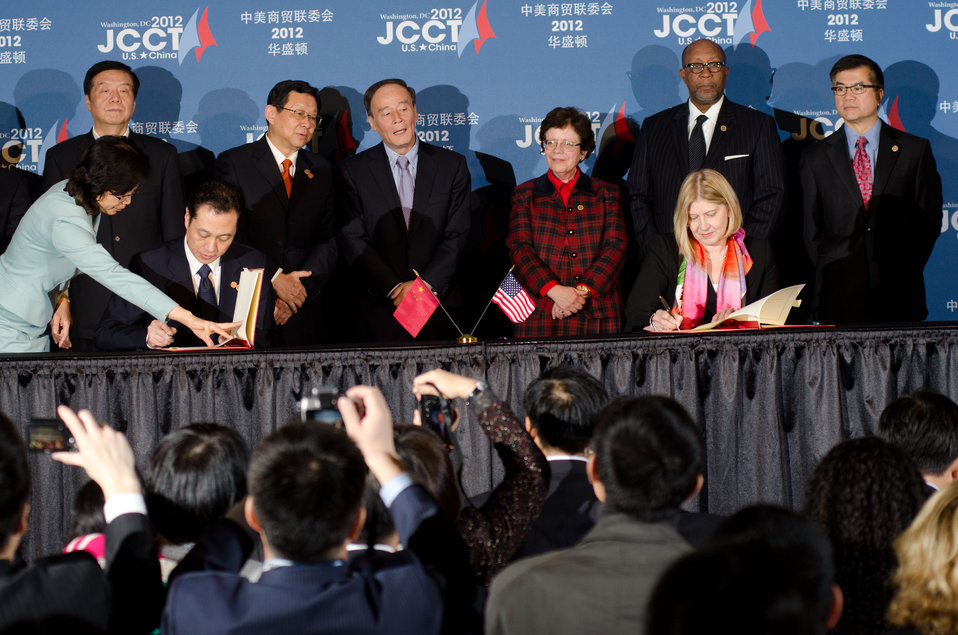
Chinese Ministry of Commerce Vice Minister Wang Chao (left) and U.S. Trade and Development Agency Acting Director Leocadia Zak (right) exchange the signed Memorandum of Understanding between the U.S. Trade and Development Agency and the Ministry of Commerce of the People’s Republic of China in Support of U.S.-China Trade Cooperation, with the support of with the support of principal leaders from the Chinese delegates and U.S. hosts, (L to R) China’s Ambassador to the U.S. Zhang Yesui, Vice Minister of Industry and Information Technology Liu Lihua, Chinese Minister of Commerce Chen Deming, Chinese Vice Premier Wang Qishan, Acting U. S. Commerce Secretary Rebecca Blank, U.S. Trade Representative Ron Kirk and U.S. Ambassador to China Gary Locke during a signing ceremony at the conclusion of the 23rd Session of the US-China Joint Commission of Commerce and Trade at the Andrew W. Mellon Auditorium in Washington, D.C. on Wednesday, Dec. 19, 2012. Supporting the signing is Chinese Vice Premier Wang Qishan (center). The JCCT holds high-level plenary meetings on an annual basis to review progress made by working groups that focus on a wide variety of trade issues. These working groups meet throughout the year to address topics such as intellectual property rights, agriculture, pharmaceuticals and medical devices, information technology, tourism, commercial law, environment, and statistics.